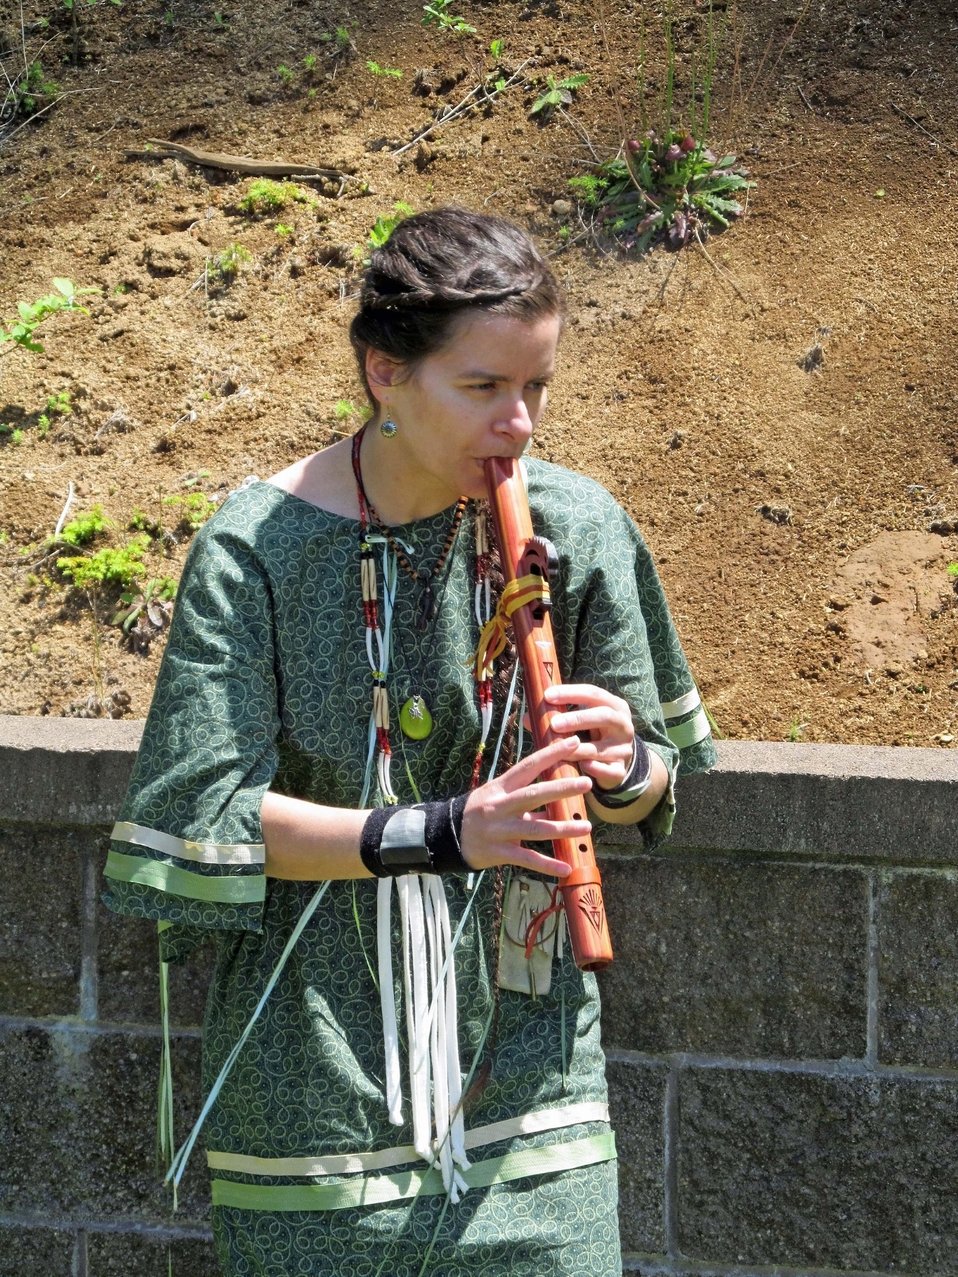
TrailDay flute

Mary-Beth Nickel performs during the dedication of the new Ya’Xaik (pronounced yäh’ khīk) Trail in the Siuslaw National Forest near the City of Yachats, OR on Jun. 1, 2013.